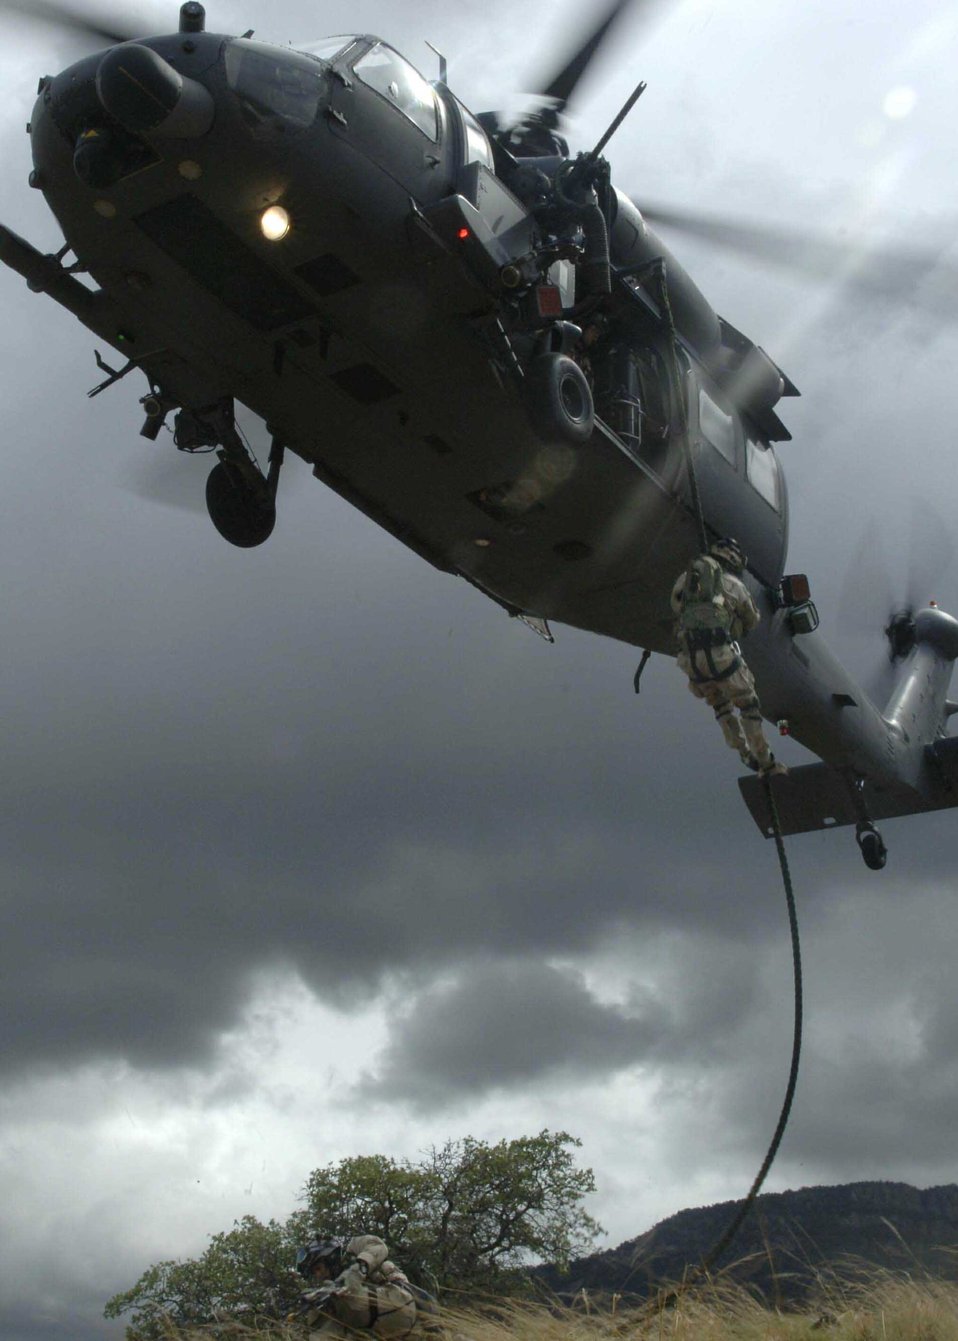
Angel Thunder

Pararescuemen from the 58th Rescue Squadron fast rope out of a HH-60 Pavehawk to reach a simulated crash site July 27 as part of a mass casualty scenario in exercise Angel Thunder. The mass casualty scenario involved two CH-47 Chinook helicopters crashing. Once on the ground, pararescuemen triaged survivors and relocated them to a casualty collection point. They were then flown to Davis-Monthan Air Force Base to a simulated level 2/3 medical facility. This part of exercise Angel Thunder involved the 48th, 58th, 66th, 79th and 305th Rescue Squadrons as well as air support from the 358th Fighter Squadron.